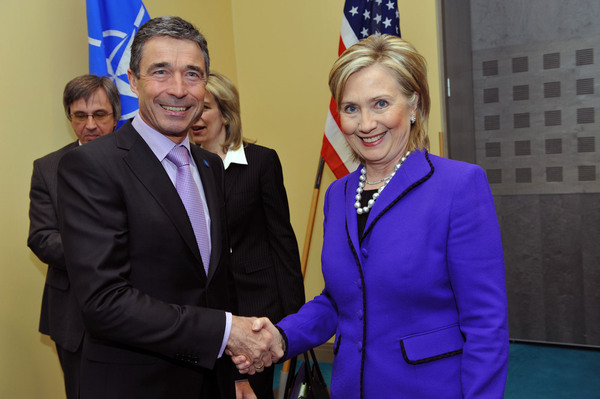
NATO Secretary General Rasmussen With Secretary Clinton

NATO Secretary General Anders Fogh Rasmussen shakes hands with U.S. Secretary of State Hillary Rodham Clinton during the NATO-U.S. Bilateral Meeting in Tallinn, Estonia, April 22, 2010.